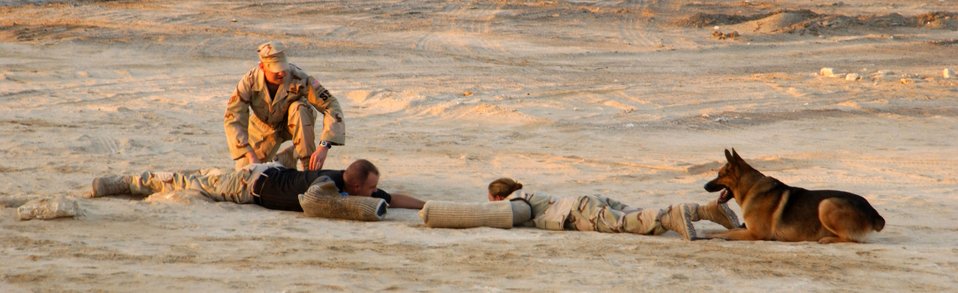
Stand perfectly still...

Tech. Sgt. Keith Crowder searches Staff Sgt. Michael Iverson and Senior Airman Melissa Shubert as Endy stands guard during a military working dog demonstration Oct. 21. All three Airmen and Endy are assigned to the 380th Expeditionary Security Forces Squadron at this deployed location in Southwest Asia where working dog teams provide security for the largest air refueling fleet in the theater.